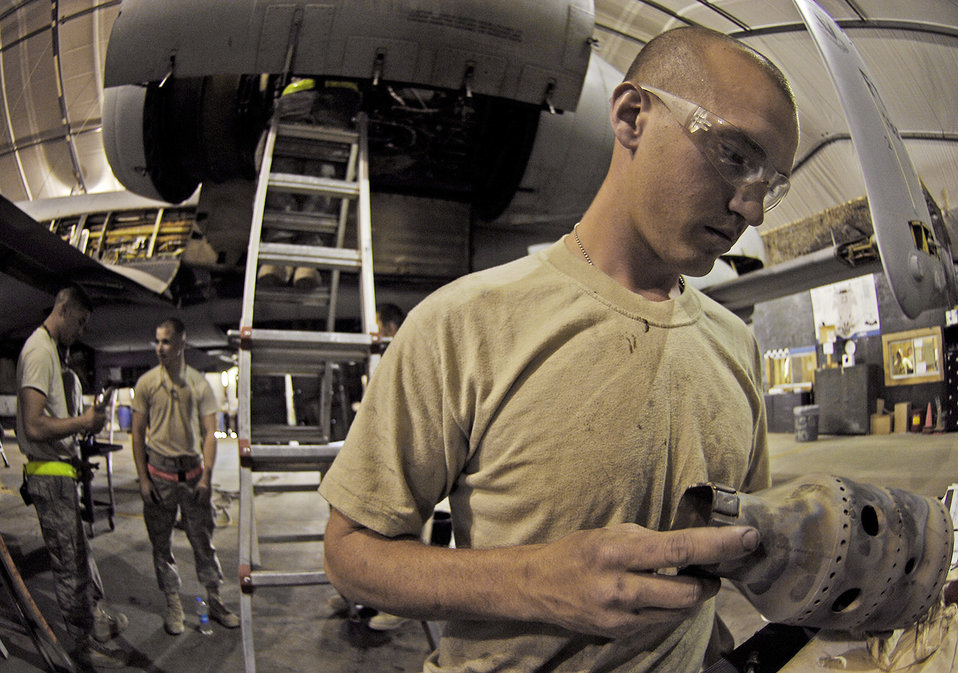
Innovative maintainers save time, lives of front line troops

Staff Sgt. Brad Rackley inspects an A-10 Thunderbolt II auxiliary power unit combustion canister during a phase inspection July 2 at Bagram Airfield, Afghanistan. Maintainers here implemented a new phase inspection process that cuts maintenance time on the aircraft in half and ensures the aircraft can provide close-air support for ground troops in Afghanistan. Sergeant Rackley is a 455th Aircraft Maintenance Squadron engine inspection technician.